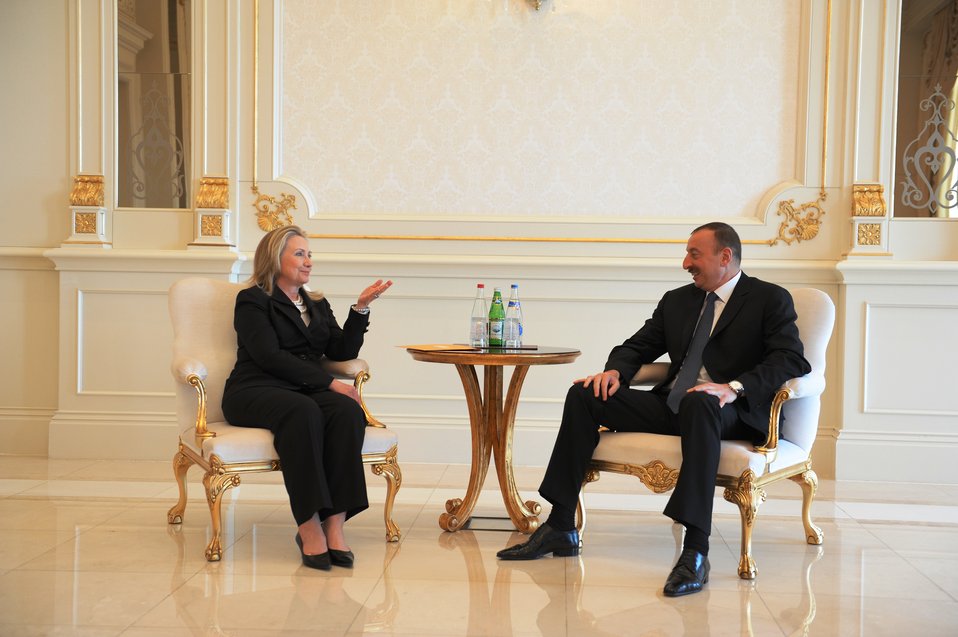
Secretary Clinton Meets With Azerbaijani President Aliyev

U.S. Secretary of State Hillary Rodham Clinton meets with Azerbaijani President Ilham Aliyev in Baku, Azerbaijan, on June 6, 2012.